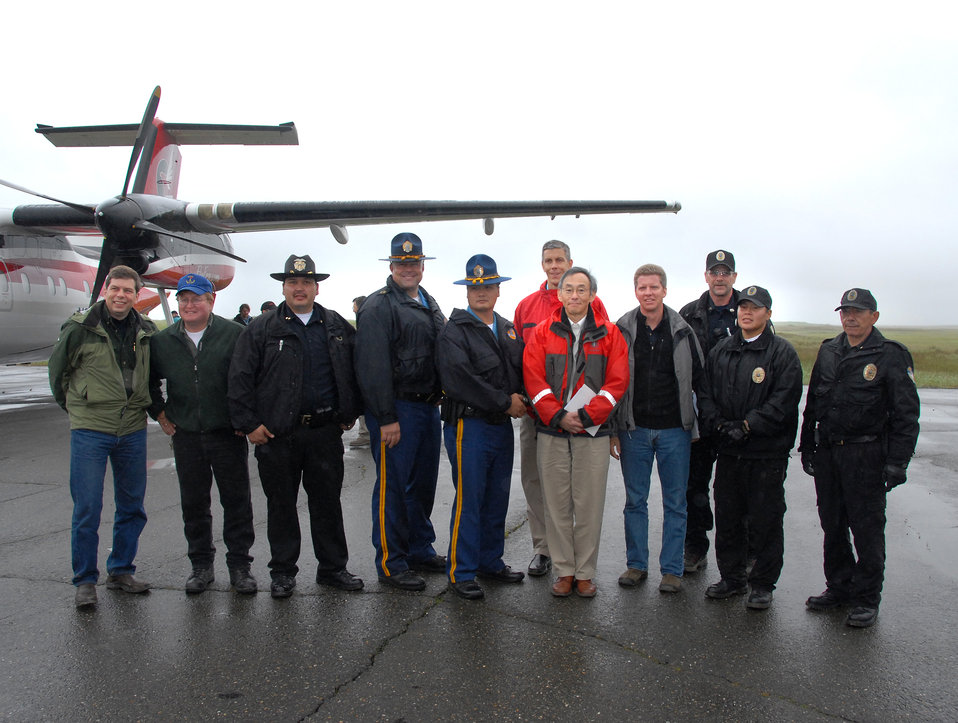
Rural Tour 0355

Rural Tour Alaska Aug 2009